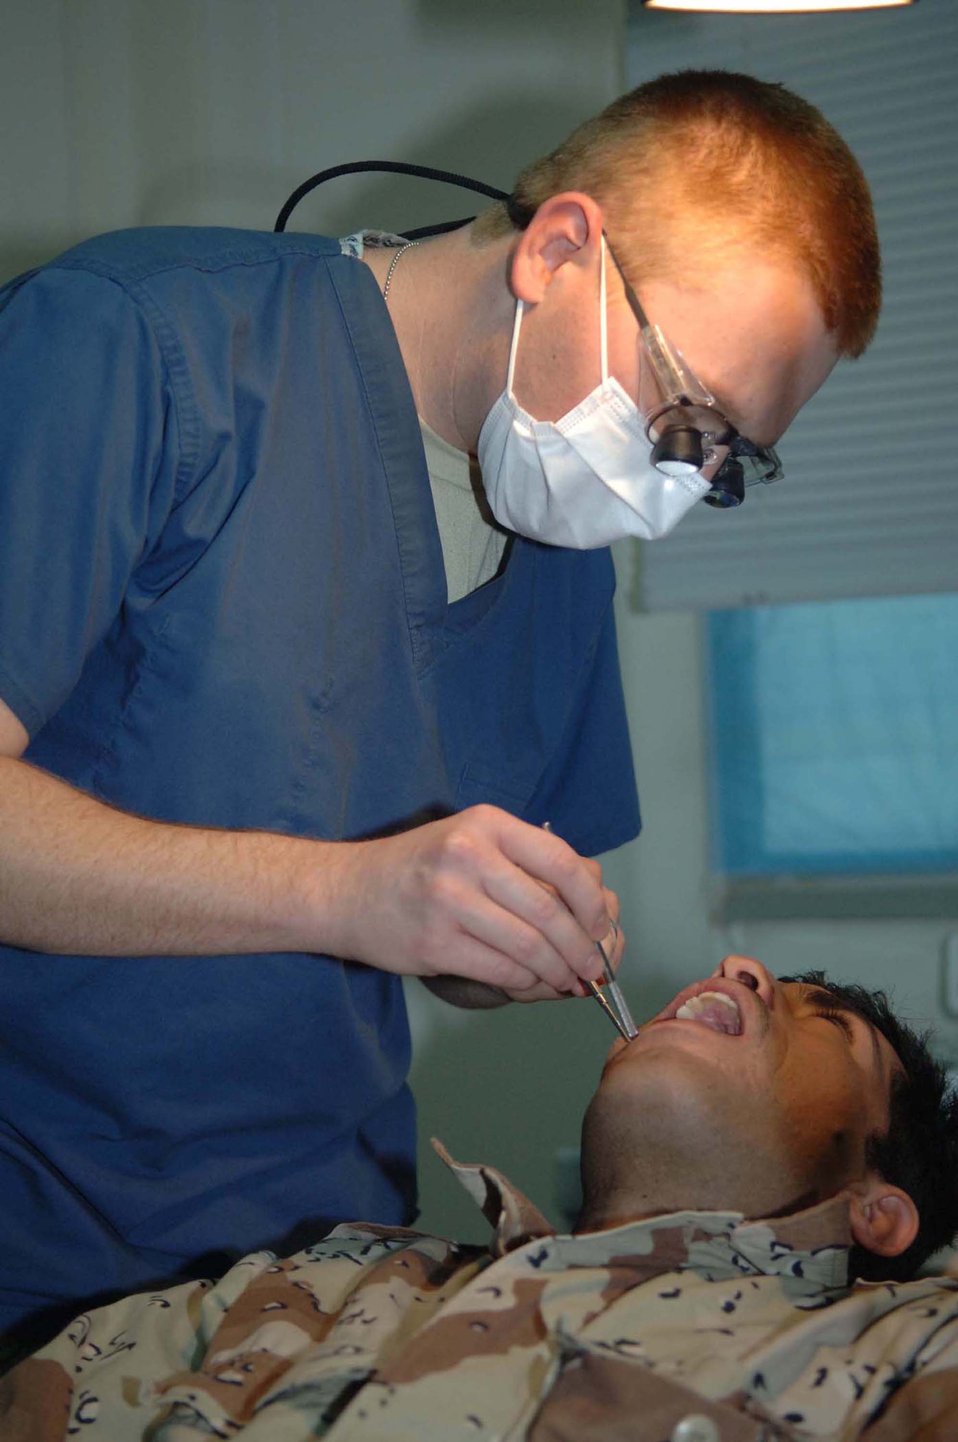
Air Force dental team cares for Iraqi counterparts

Capt. Lanny Giesler extracts a tooth from an Iraqi special forces soldier Dec. 5 at Victory Base Complex, Iraq. Captain Giesler, a Special Operations Iraqi Transition Team dental adviser, is deployed from Little Rock Air Force Base, Ark.